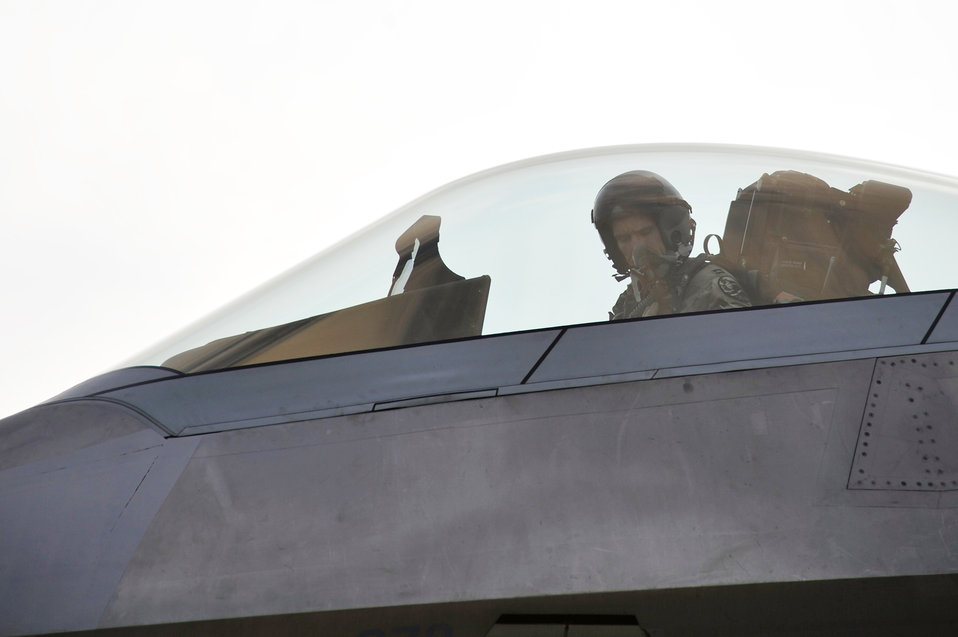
Raptors fly in Iron Falcon

Capt. Blaine Jones, 1st Fighter Wing pilot, prepares to taxi an F-22 Raptor Nov. 30, 2009, at an airfield in Southwest Asia. Captain Jones is participating in the Iron Falcon exercise while on temporary duty from Langley Air Force Base, Va. Captain Howard is from Kingman, Kan.